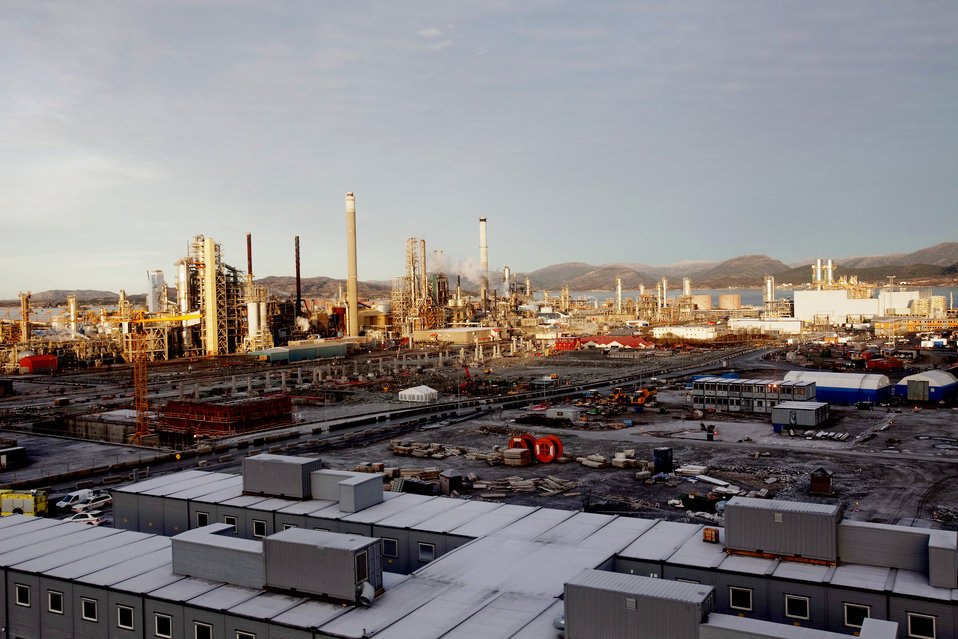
TCM

HAUGESUN 20091212.
Oljeraffineriet på Mongstad.
Foto: Stian Lysberg Solum / Scanpix